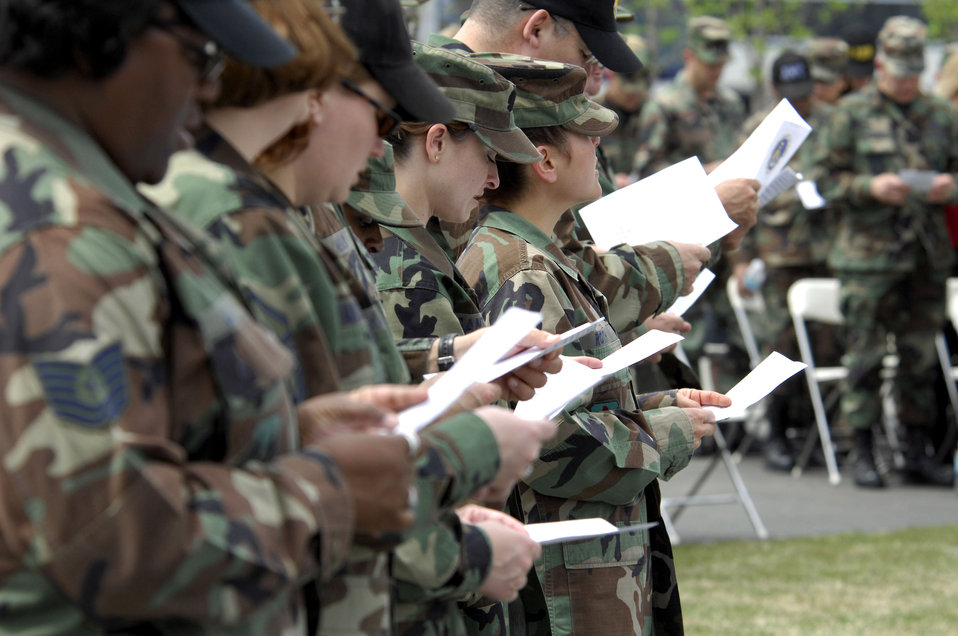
Air Force chaplains join together for memorial service

Nearly 300 Air Force chaplains and chaplain's assistants from around the globe joined together April 25 beneath the spires of the Air Force Memorial in Arlington, Va., for a special wreath-laying ceremony in honor and in memory of Air Force chaplains and chaplain's assistants who have served.